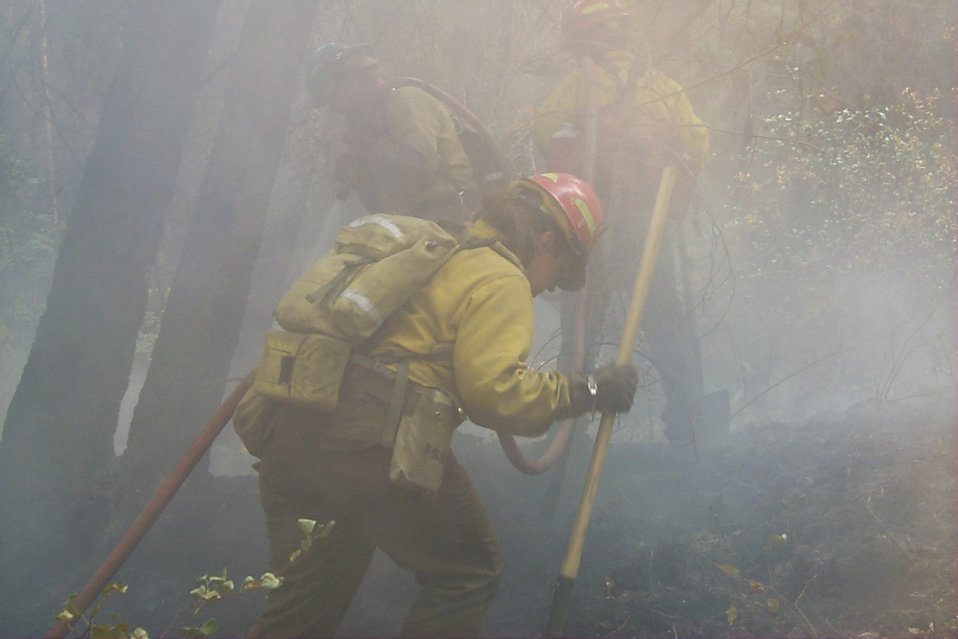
Line crew Fire Clearwater Fire Salmon Field Office USRD Upper Snake River District